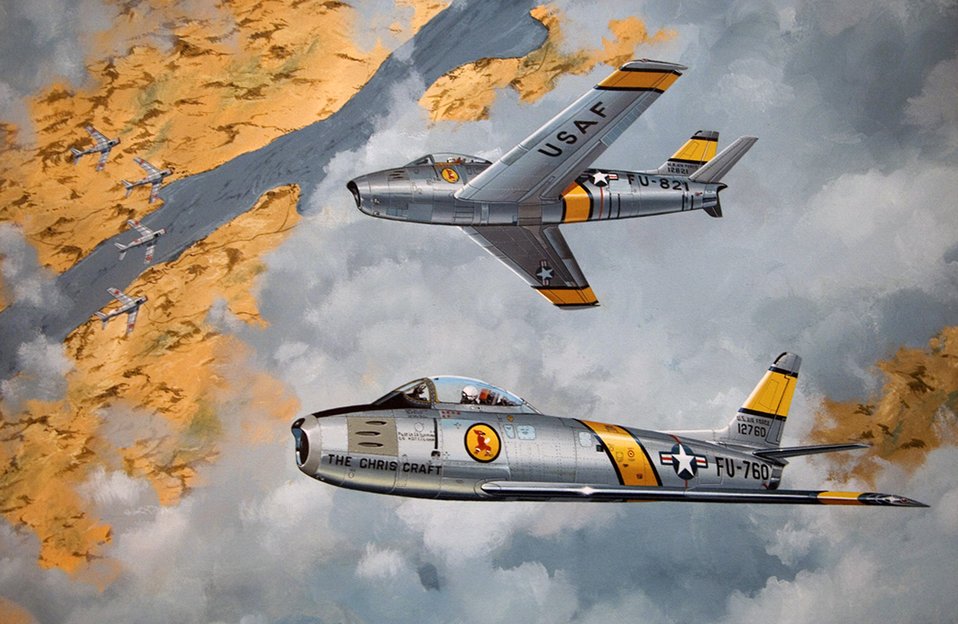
Retired general becomes Air Force's newest fighter ace

A painting of the